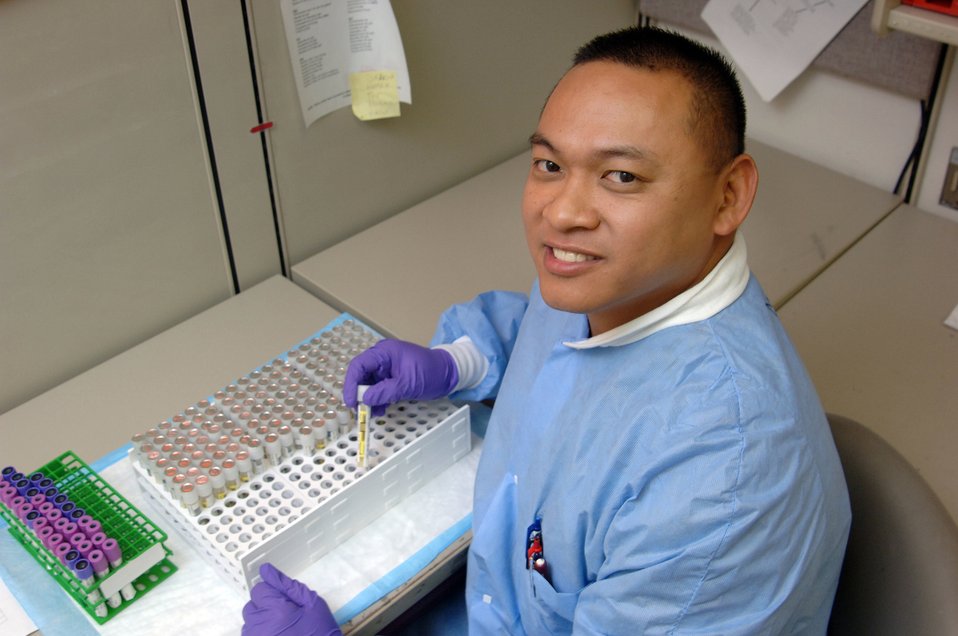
Central operations

Tech. Sgt. Cesar Abinsay works on some diagnostic specimens Wednesday, April 19, 2006. Sergeant Abinsay runs the day-to-day logistics at central operations for the Air Force Institute for Operational Health at Brooks City-Base, Texas. The institute receives specimens from more than 300 Department of Defense global facilities.